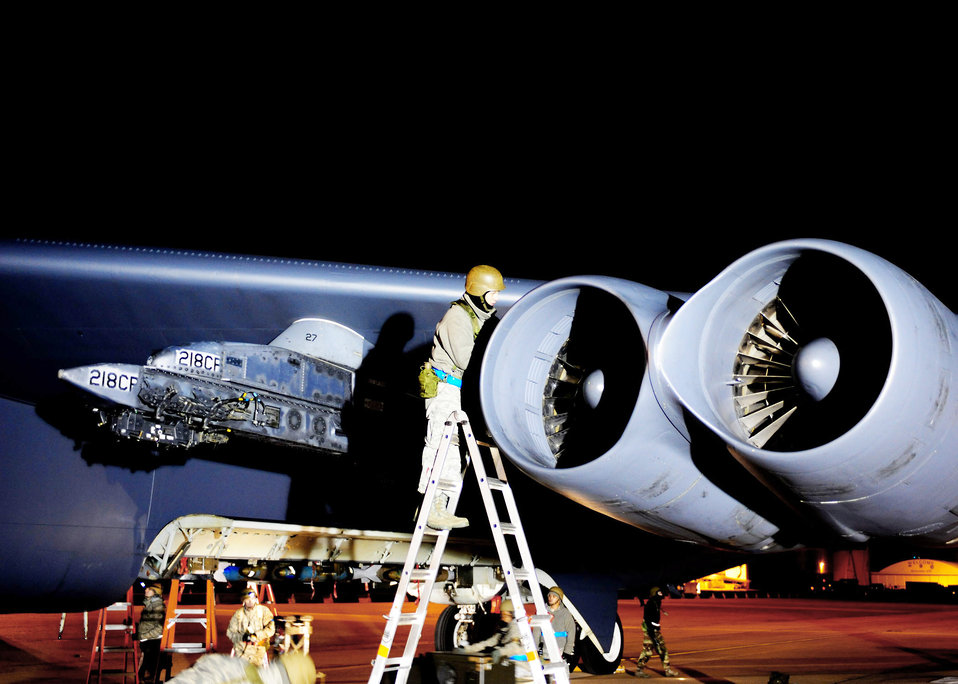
Getting it ready

Staff Sgt. Ben Norton works to regenerate a B-52 Stratofortress Dec. 8, 2009, at Barksdale Air Force Base, La. Airmen work around the clock at a